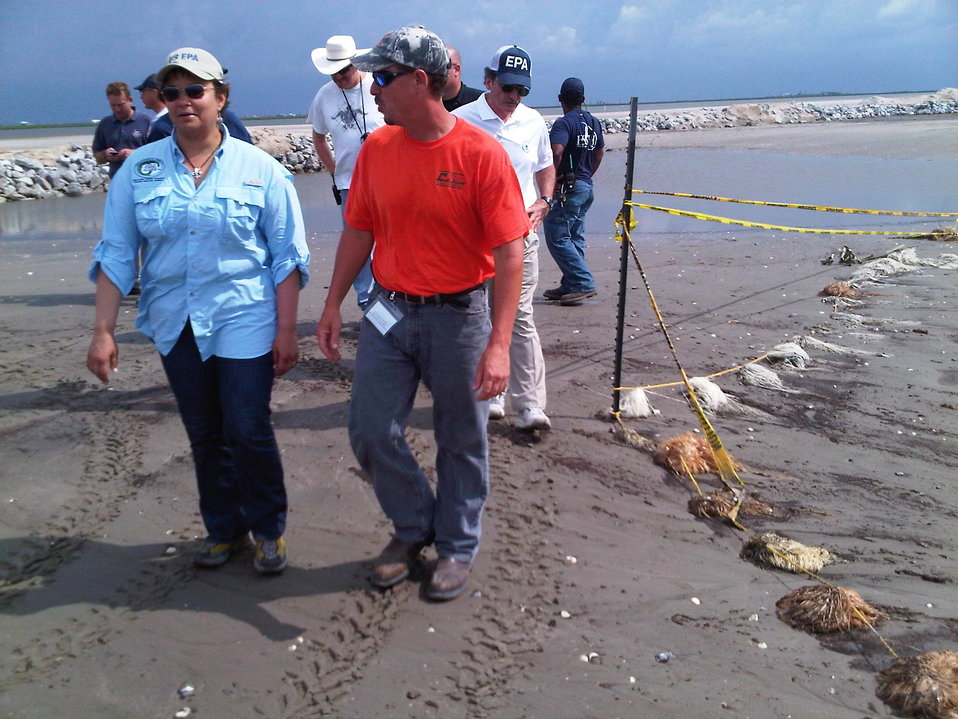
June 2, Walking the Impacted Beaches in Port Fourchon, LA